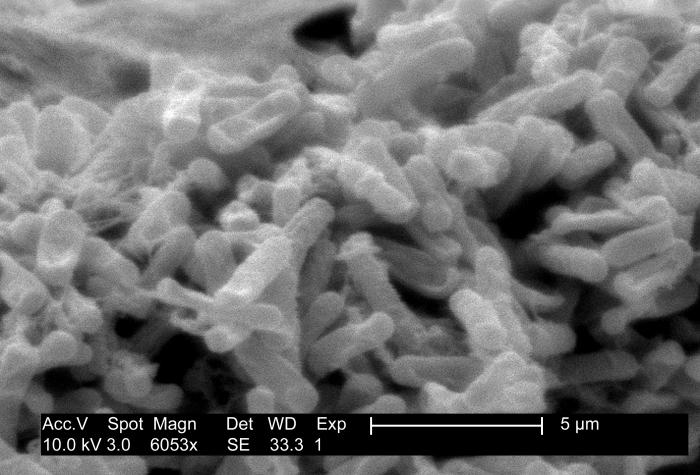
This micrograph depicts Gram-positive C. difficile bacteria from a stool sample culture obtained using a .1�m filter.